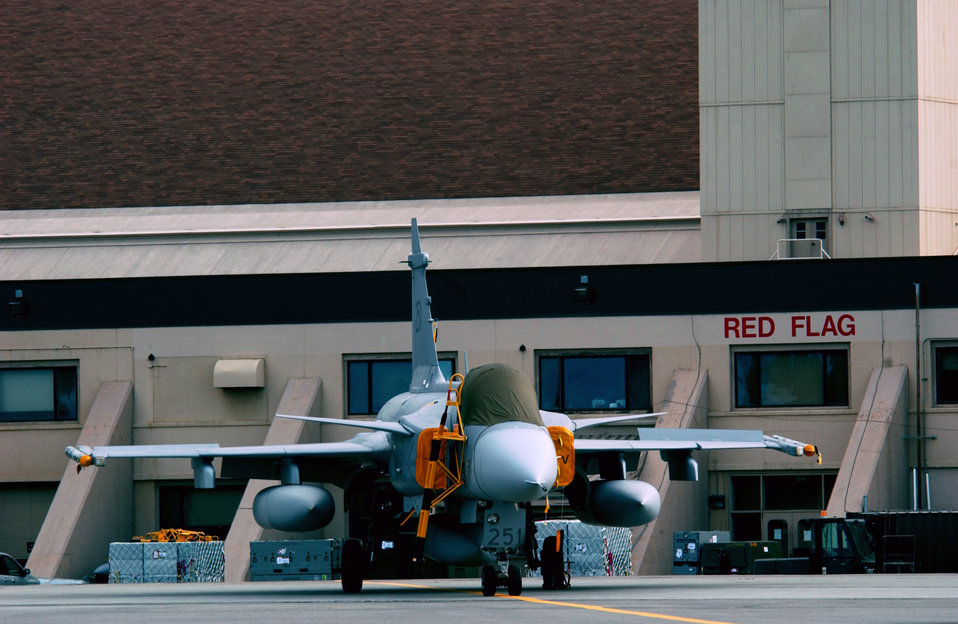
Cooperative Cope Thunder 2006

A JAS 39 Gripen from the Swedish Air Force's Tango Red unit based at Malmen Air Base, Sweden, sits on the flightline at Eielson Air Force, Alaska, on July 18 in preparation for Cooperative Cope Thunder 2006. The combined joint air training exercise provides scenarios that are as realistic as combat within the constraints of the training environment.